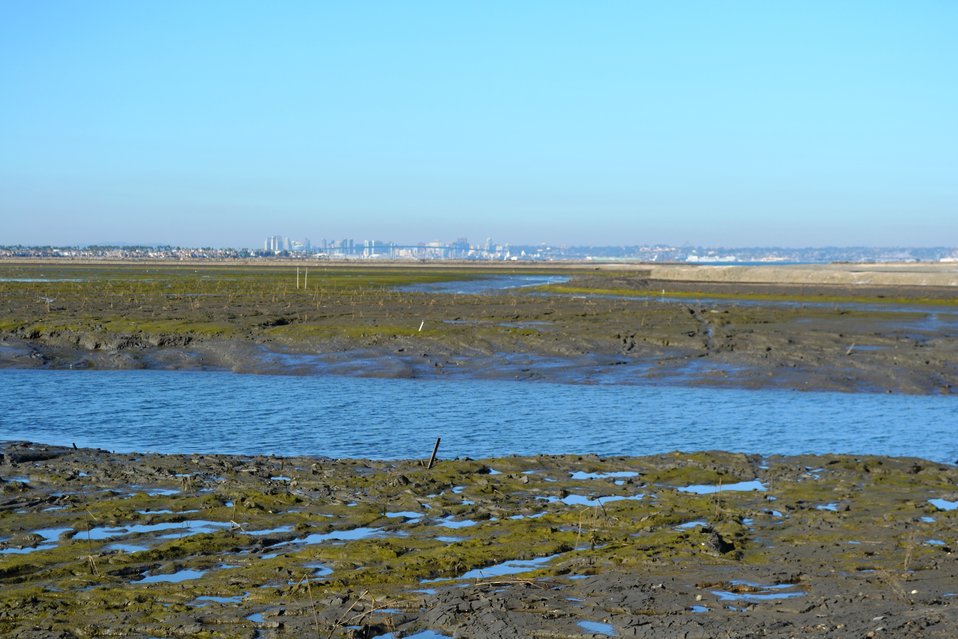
Otay River water flows into the newly-breached former salt ponds on the San Diego Bay NWR

Looking North, the Coronado bridge is visible in the distance, with the San Diego Bay NWR in the foreground. It is the site of the South San Diego Bay Coastal Restoration & Enhancement Project completed in fall of 2011. This photo captures the vivid colors of new algal growth taking place. The main channel of water here is a healthy mix of bay water and freshwater from the Otay River, which hasn't been able to flush the western salt ponds 10, 10a, and 11, since the 1950s.